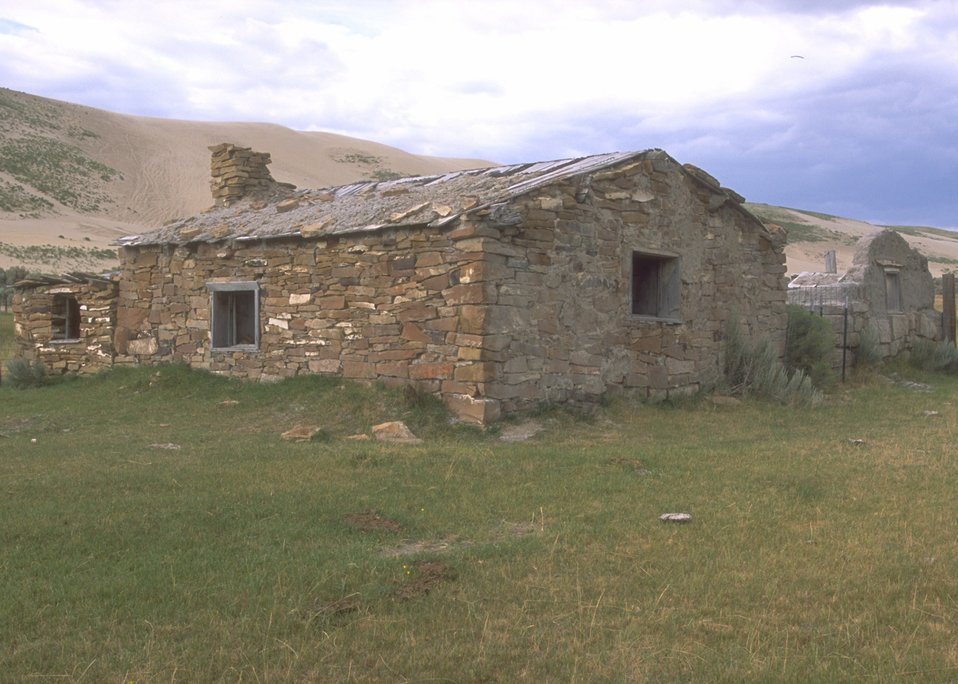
Historic Crookston Ranch near OHV Sand Dunes Area, Rock Springs Field Office.